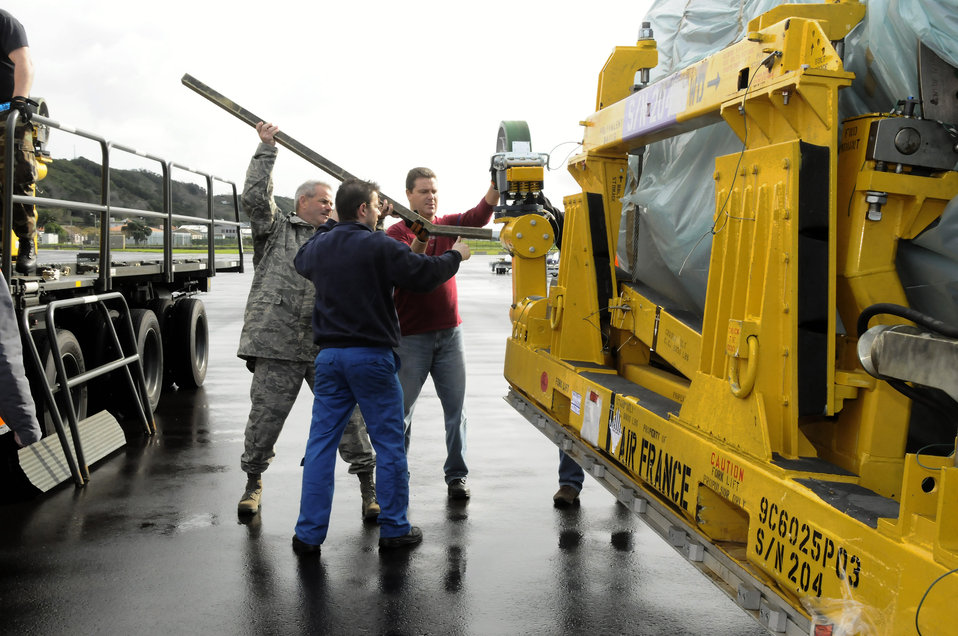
Lajes Field Airmen help disabled French aircraft

Chief Master Sgt. John Wright assists Air France crewmembers by folding down wheels on the dolly the new engine for the downed Air France 777 aircraft was sitting on Jan. 6 at Lajest Field, Azores. Chief Wright is assigned to the 729th Air Mobility Squadron.